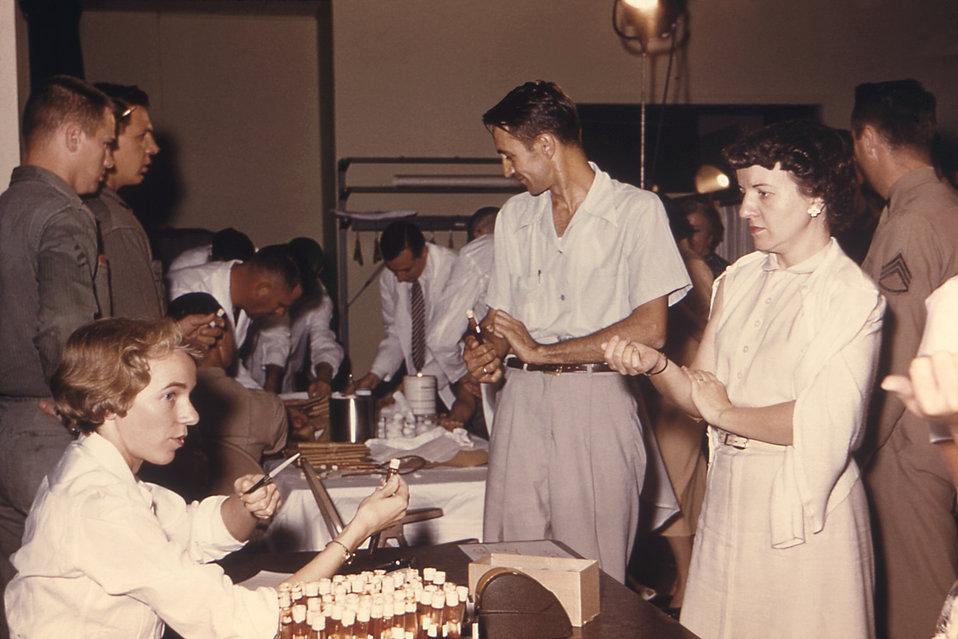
From 1957, this photograph depicts a gathering of people lined up to receive their annual influenza immunizations.